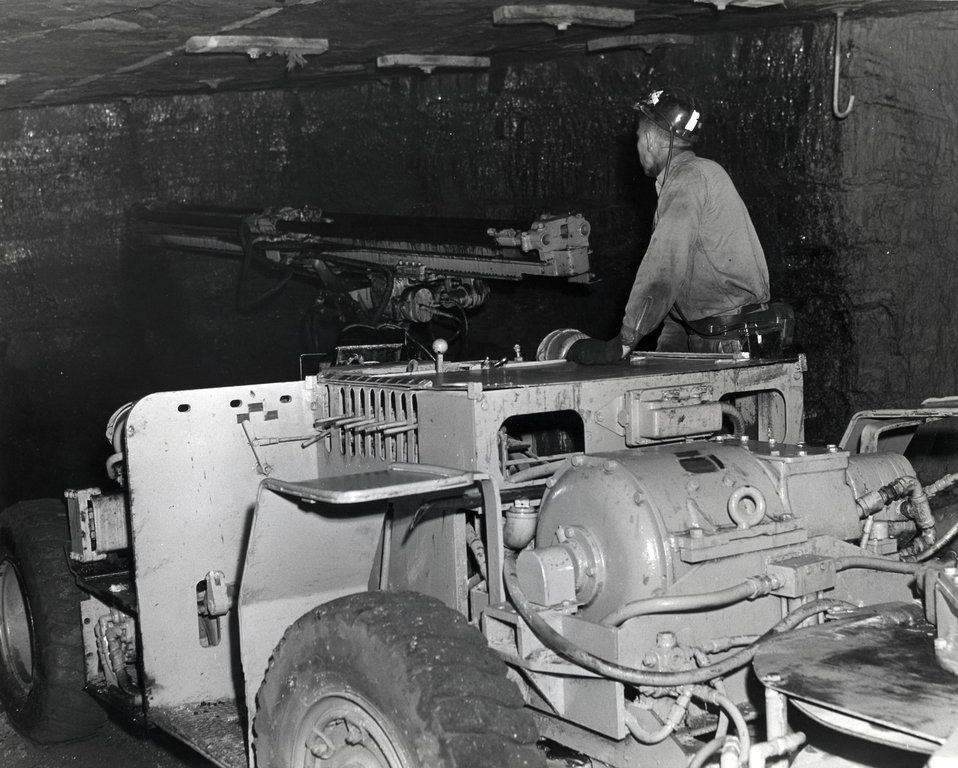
Modern coal drill bores hole in the face of a coal seam. Explosives will be placed in the holes and the face of the seam will be blasted in the conventional mining process

.